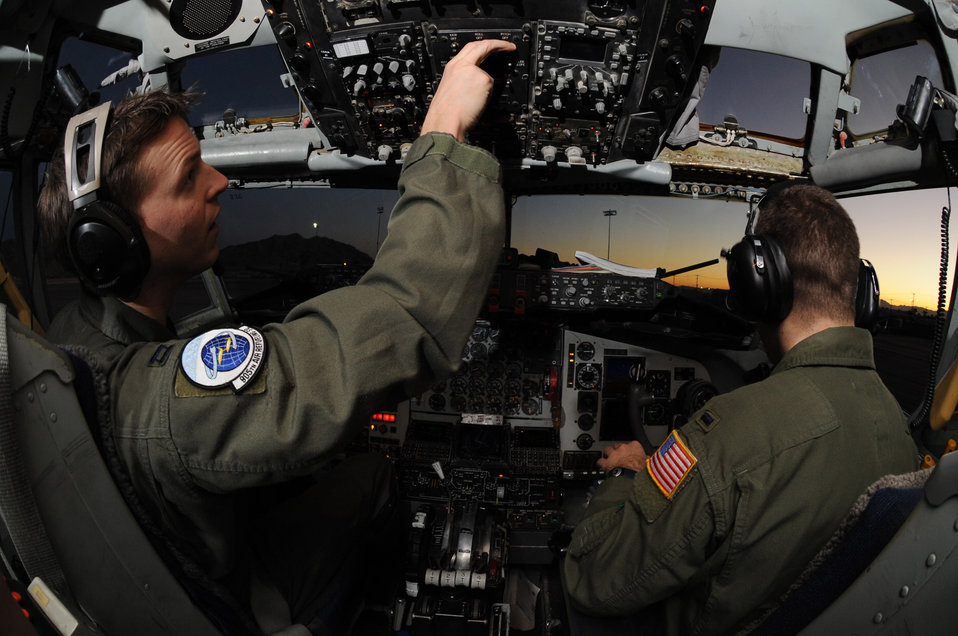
Night operations at Red Flag

Capt. Jason Merrill and 1st Lt. Joshua Rope perform a pre-flight inspection Feb. 3 in the cockpit of a KC-135 Stratotanker during a Red Flag exercise at Nellis Air Force Base, Nev. Red Flag is a multi-national exercise providing a realistic environment to practice combat scenarios. The experience gained during the exercise is vital to the survival of air crews in combat. The two pilots are from the 905th Air Refueling Squadron at Grand Forks AFB, N.D.